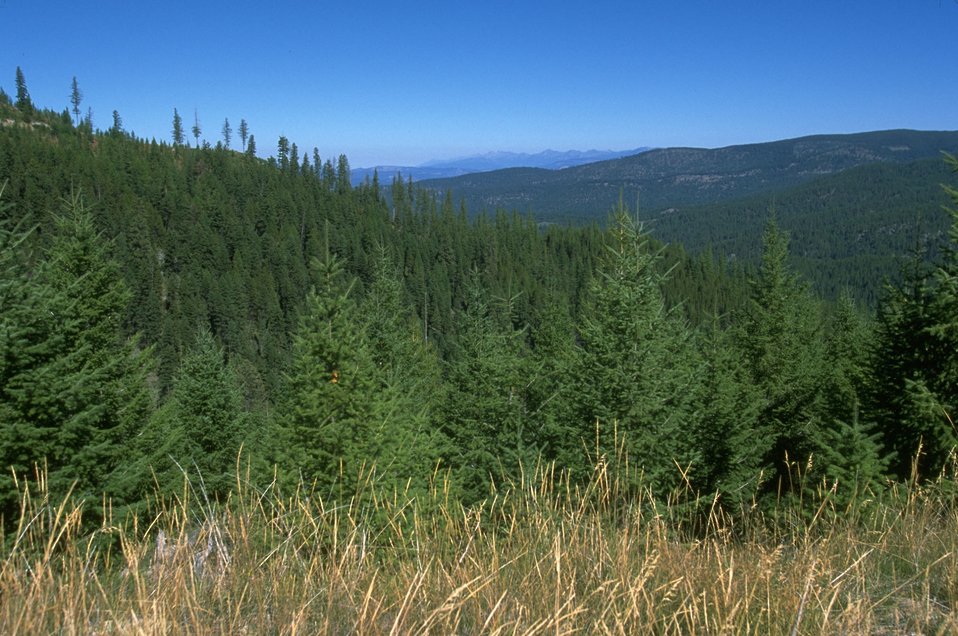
Douglas fir regeneration